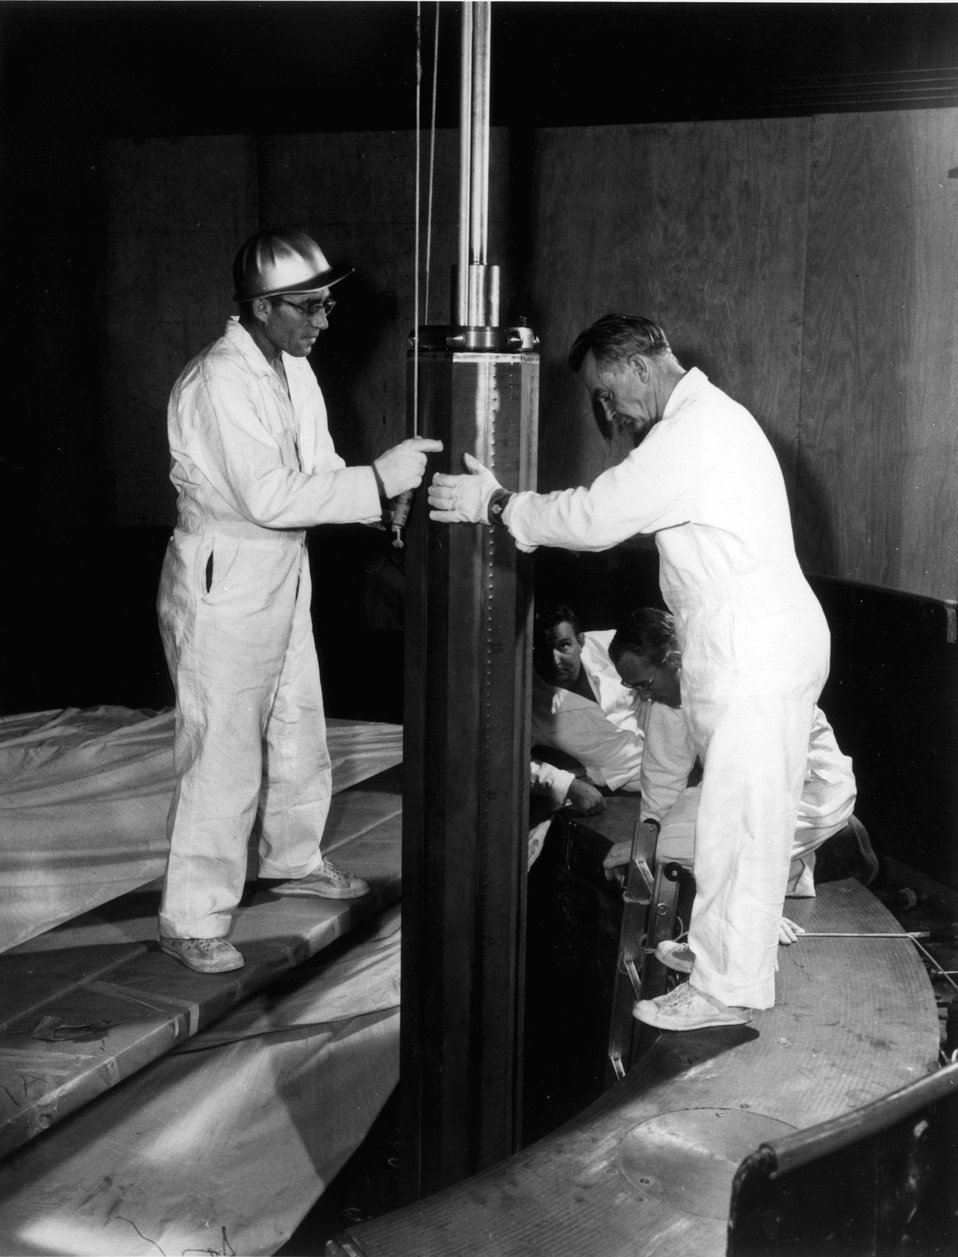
The last moderator 'can' is lowered into the reactor core of the Sodium Reactor Experiment, a nuclear power plant built by Atomics International, a division of North American Aviation Aviation, Inc., as part of the Atomic Energy Commission's program to develop economical power from atomic energy. c. 1956